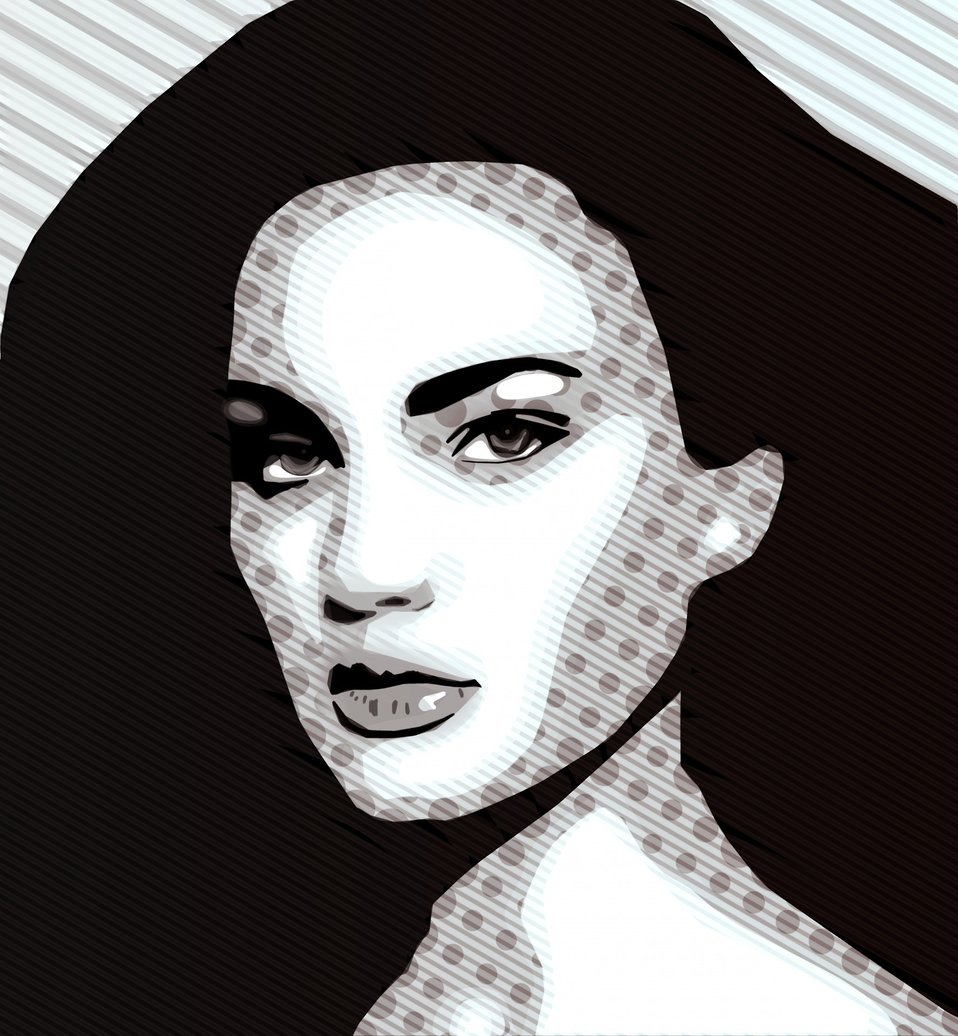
Large art face

Design vector face with details also using paint shop pro, and photo shop..